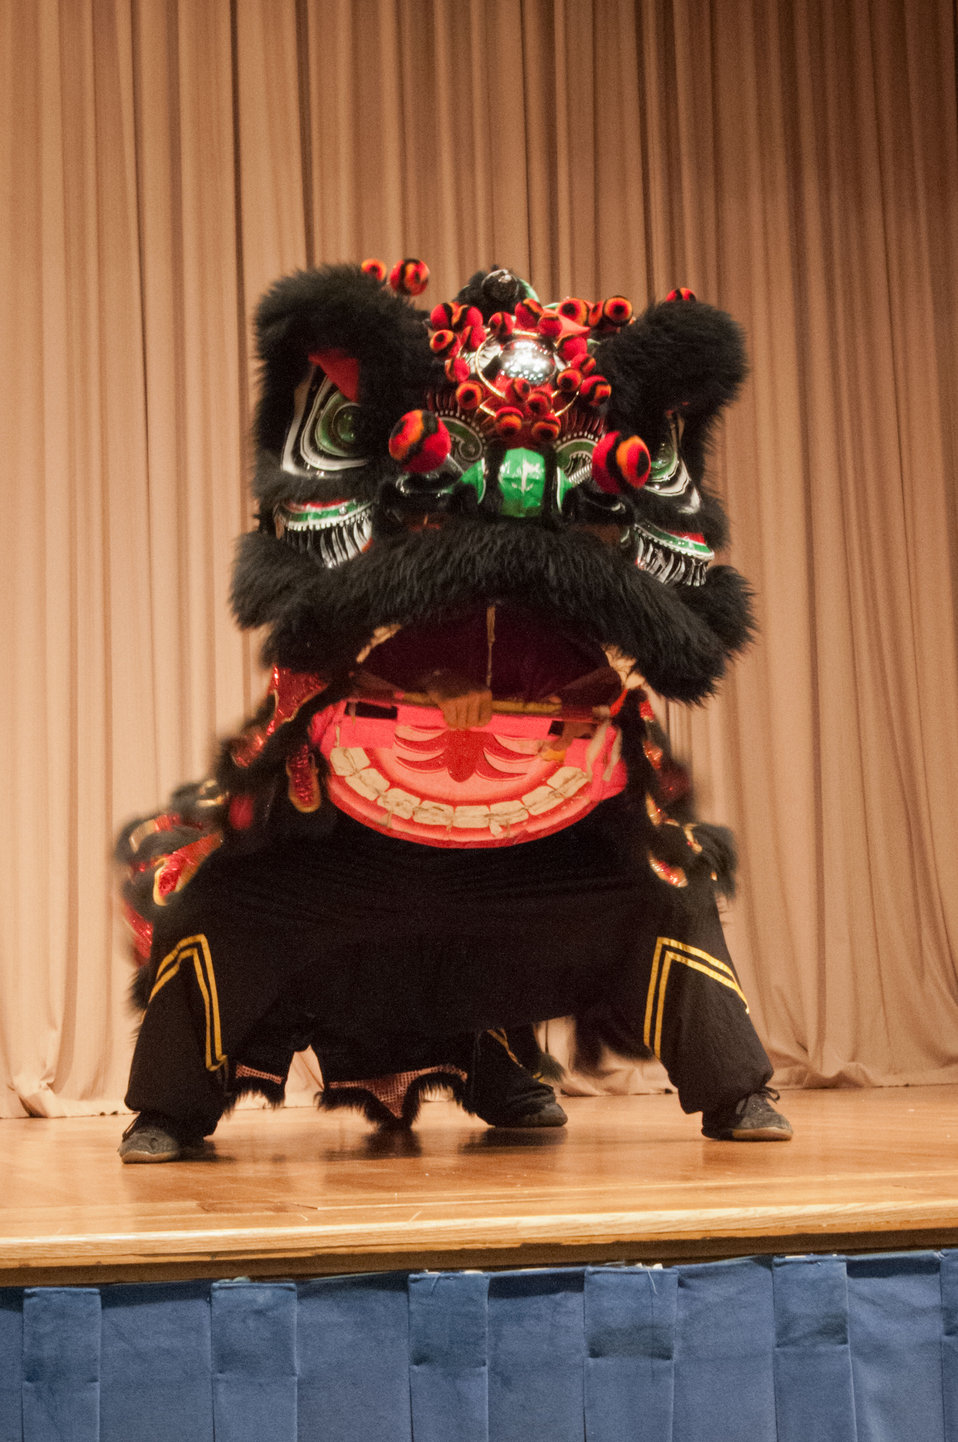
The Wong People Studio, The Ancient Chinese Dragon Dance Group performed the Dragon dance at the 2012 Asian Pacific American Heritage Observance “Striving for Excellence in Leadership, Diversity and Inclusion” at the U.S. Department of Agriculture in Washington, D.C. on Thursday, May 24, 2012. The Dragon dance is an ancient ritual based on Taoist Principles used to drive away evil spirits or bad energy (chi). The costume worn while performing this ritual is specifically designed for the purpose of driving away evil. The music for the Dragon Ritual is also an integral element of this energy directing ritual. A Dragon Ritual is successful when the Dragon, musicians and spectators synchronize their flow of internal energy (chi) to drive away the bad energy.